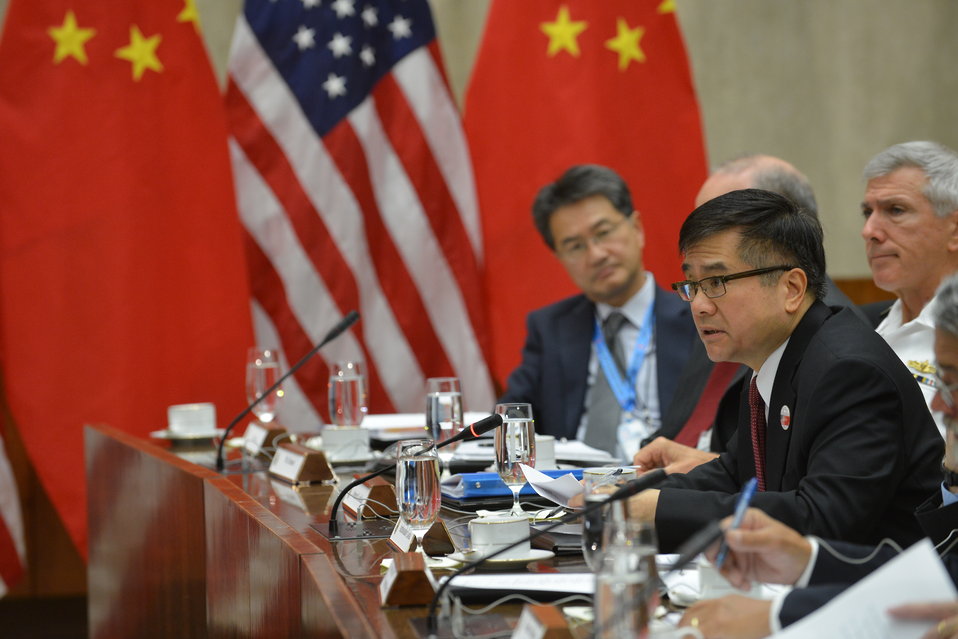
Ambassador Locke Participates in the Strategic Track Plenary Session

U.S. Ambassador to China Gary Locke participates in the Strategic Track Plenary Session during the U.S.-China Strategic and Economic Dialogue in the Loy Henderson Auditorium at the U.S. Department of State in Washington, D.C., on July 11, 2013.